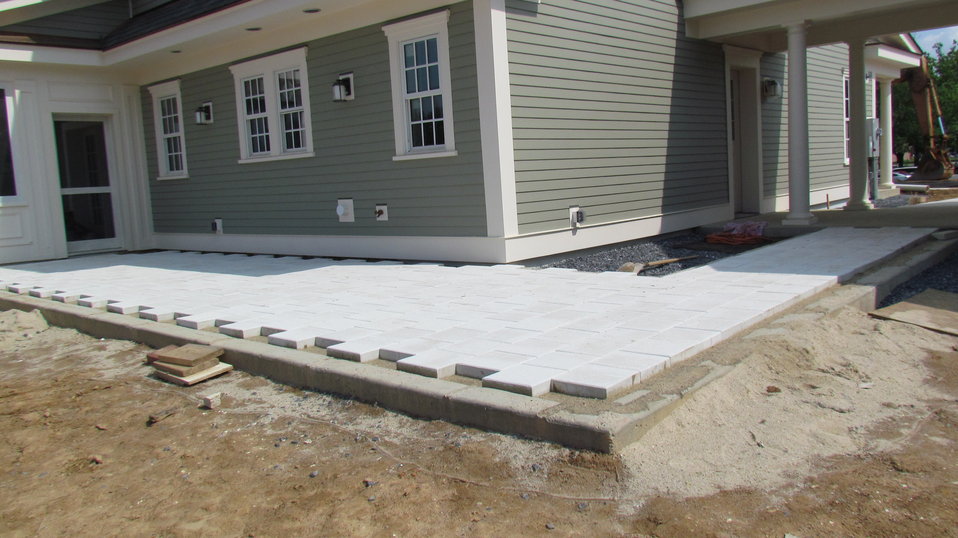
Pavers being installed on rear of facility that connect screened in porch to front walkway.